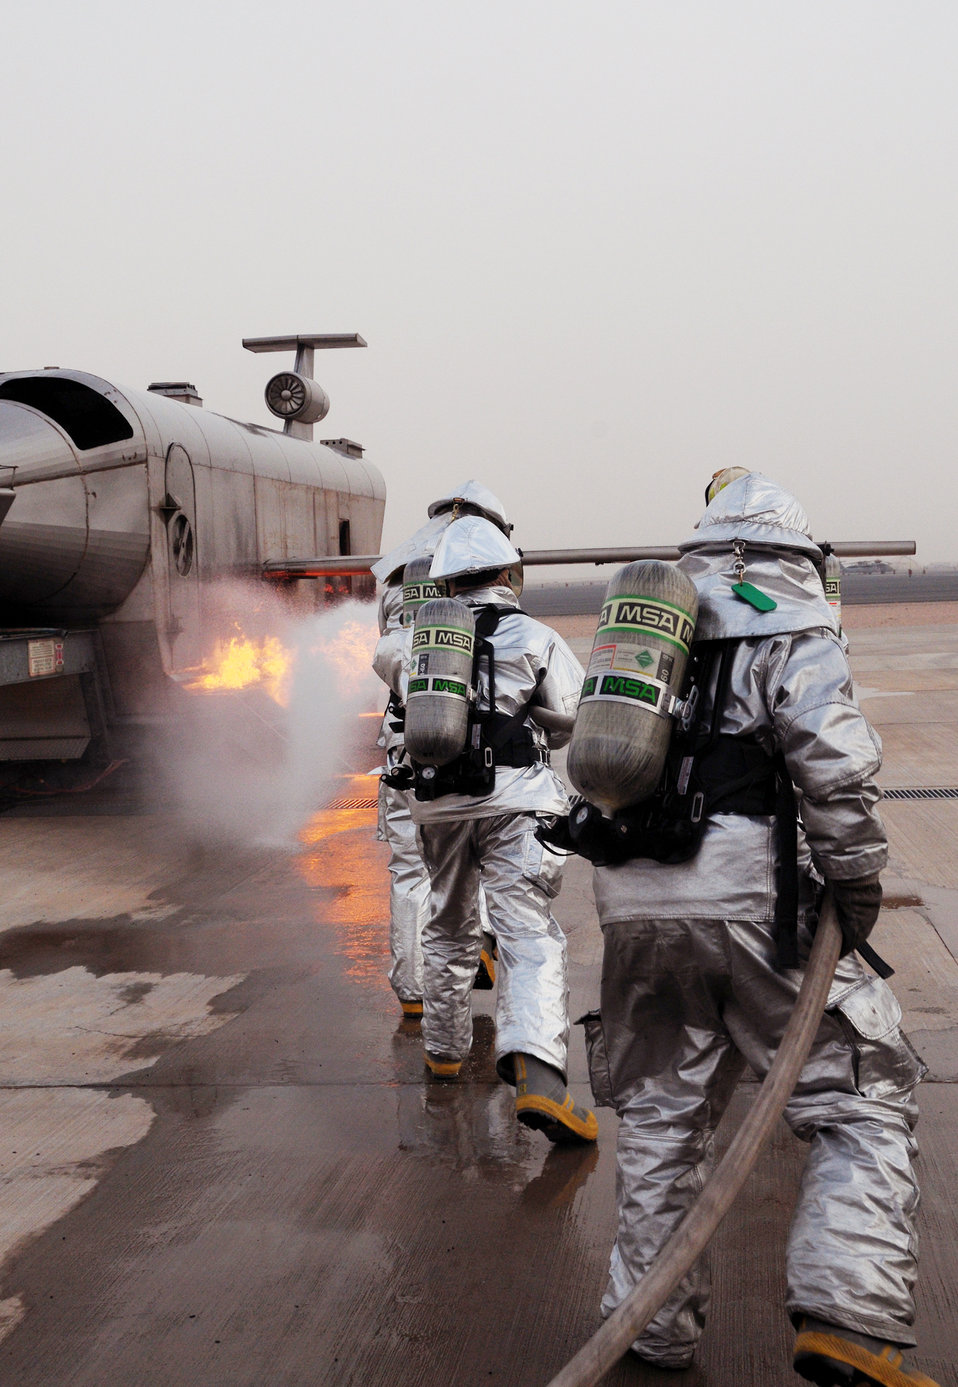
Firefighters test their skills during an annual training

Firefighters practice extinguishing an aircraft fire April 29, 2010, at an air base in Southwest Asia. The firefighters are with the 386th Expeditionary Civil Engineer Squadron.